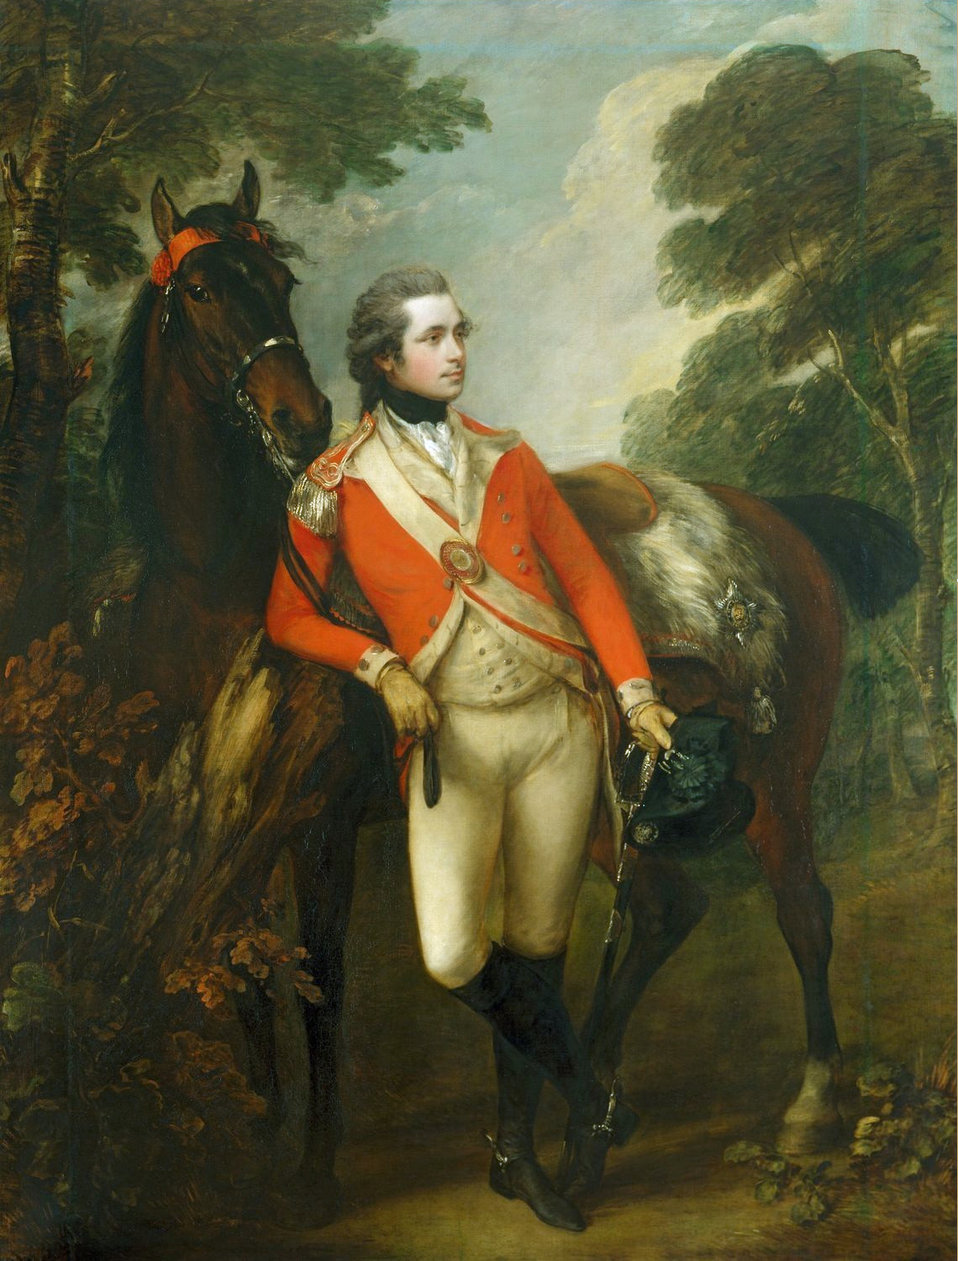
John Hayes St Leger - Gainsborough 1782